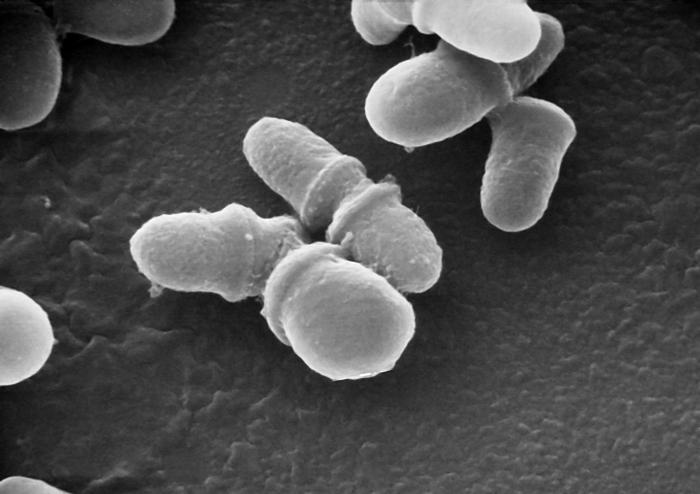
Scanning Electron Micrograph of Malassezia lipophilis